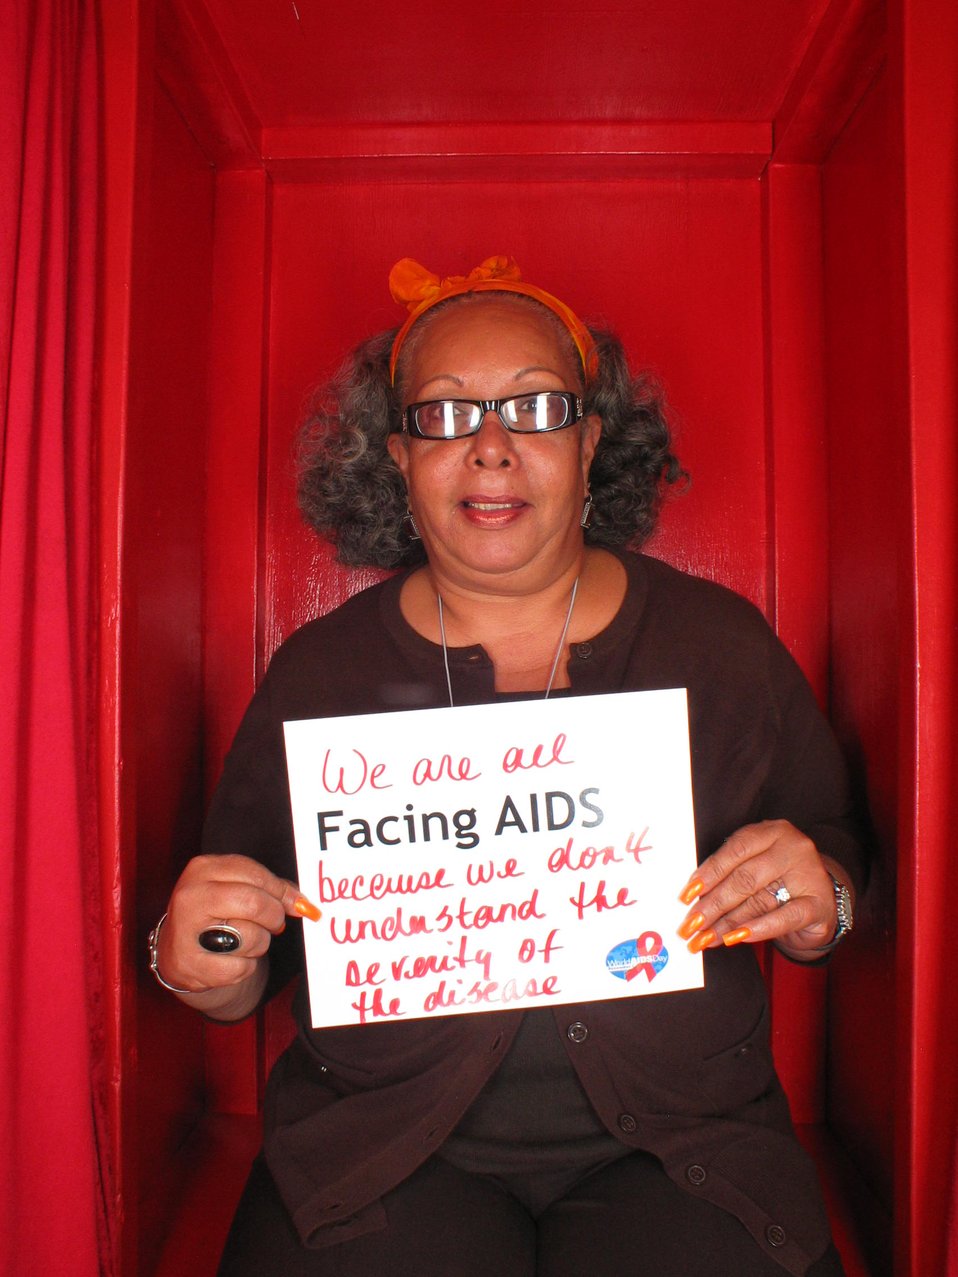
We are all Facing AIDS because we don't understand the severity of the disease.